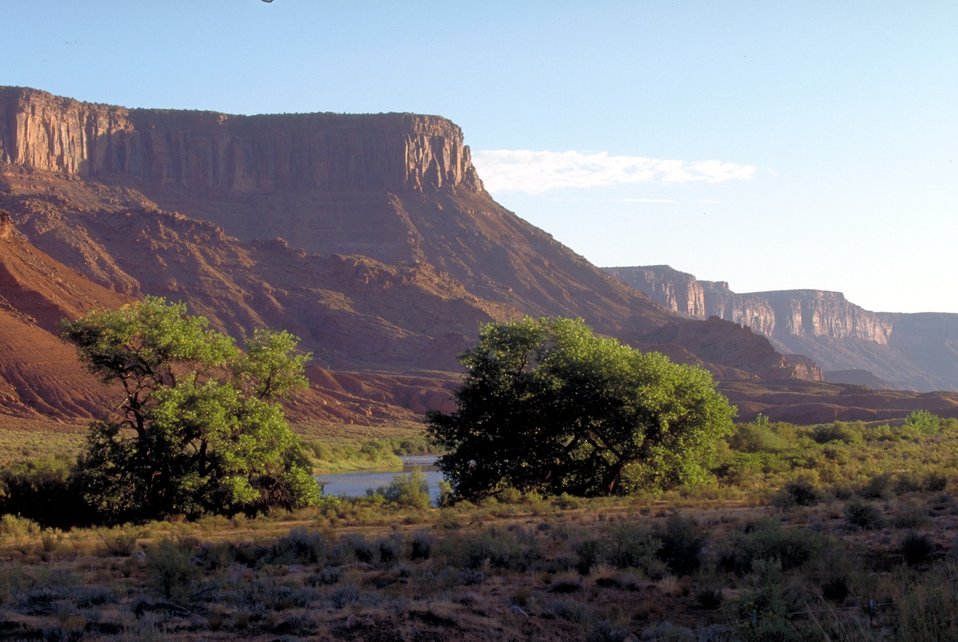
Colorado River near Moab, Utah.